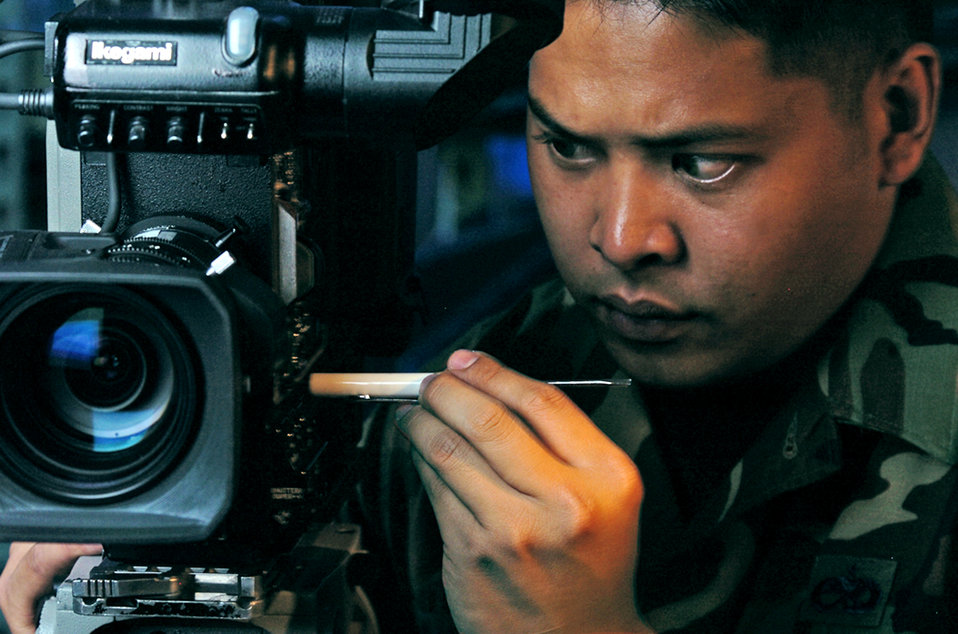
Closed circuit screening

YOKOTA AIR BASE, Japan -- Staff Sgt. Michael Santiago adjusts a circuit board on a video camera during an inspection. He is a broadcast maintainer from Air Force News Agency's Operating Location-C here. They maintain equipment for American Forces Network-Tokyo and other Air Force broadcast detachments in the area.